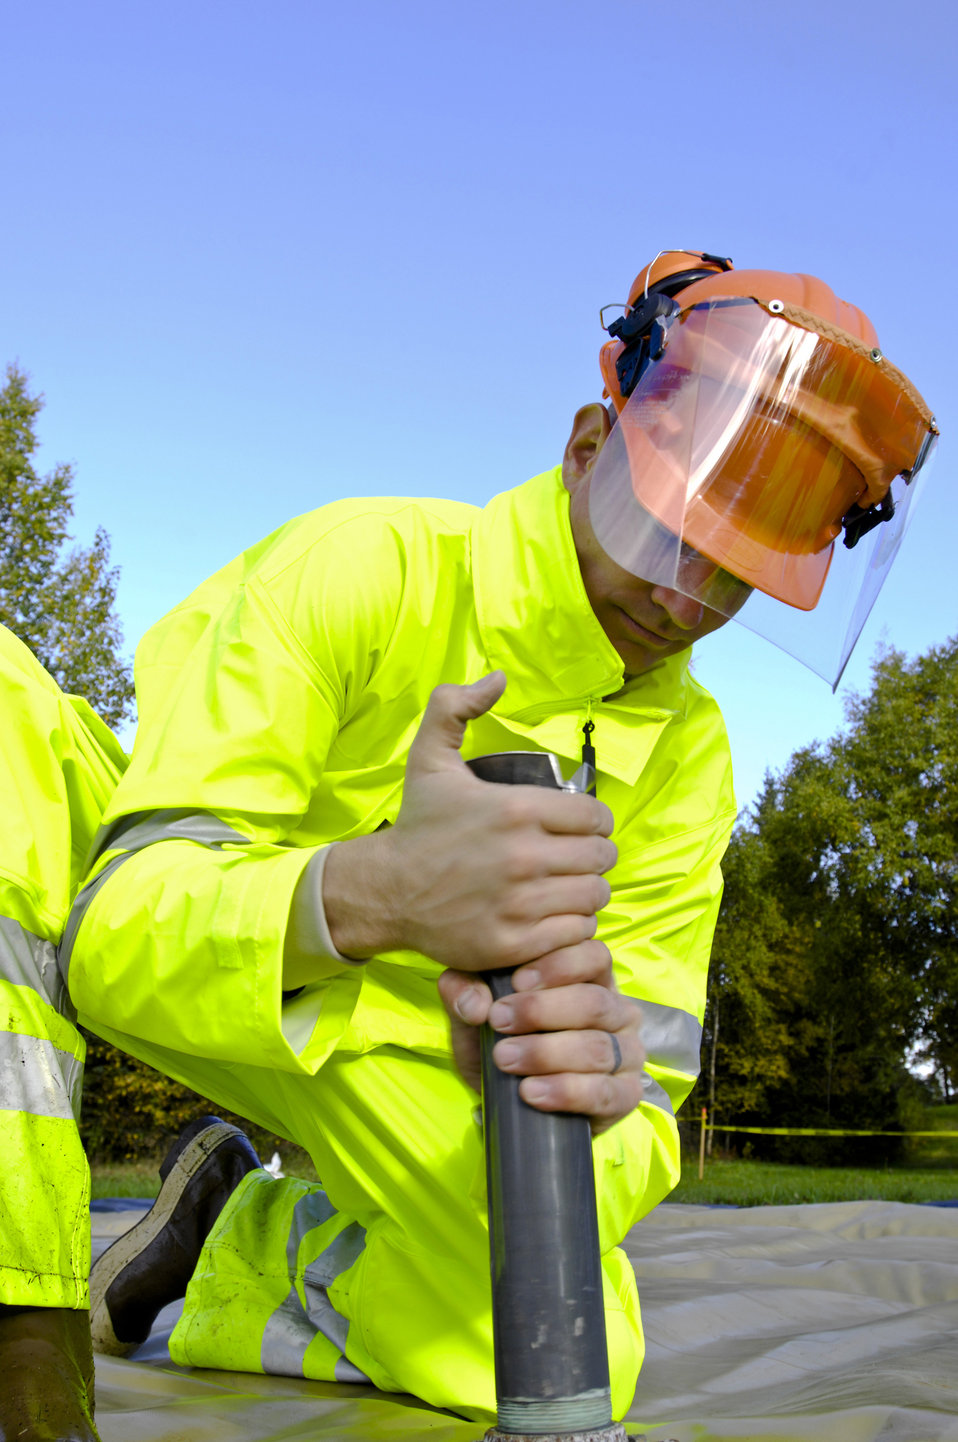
Fall spill drill

ELMENDORF AIR FORCE BASE, Alaska ? Tech. Sgt. Douglas McMullen, 611th Civil Engineer Squadron, helps assemble a decontamination unit Sept. 17. The 611th CES held its annual Fall Spill Drill here Sept. 14-18. They are required to do hands-on training twice a year, one which is held in the winter and practiced on thick ice and the second held in the fall before the ice freezes over.